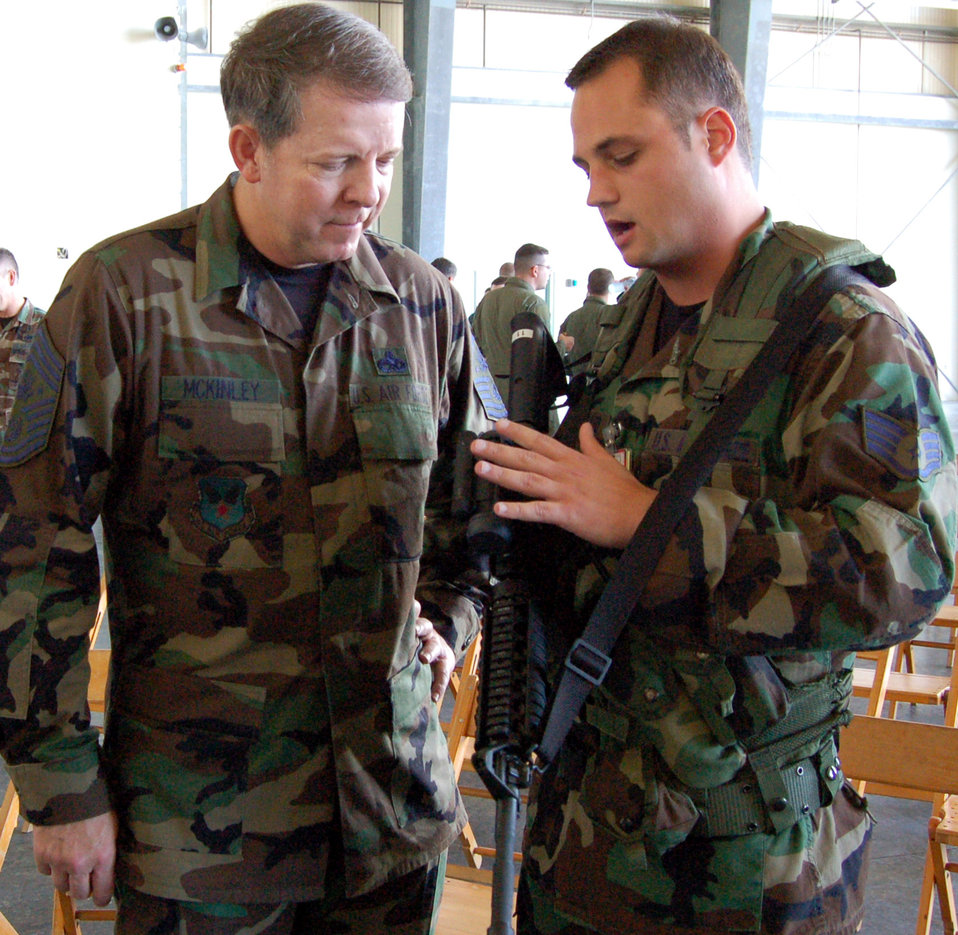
CMSAF visits Southern Command Airmen

Staff Sgt. Jimmy Badolato (right) explains the operation of his automatic rifle to Chief Master Sgt. of the Air Force Rodney J. McKinley Dec. 14 at Forward Operating Location Curacao, Netherlands Antilles. The chief stopped at the base to receive a mission orientation, talk to Airmen about Air Force issues, and spread some holiday cheer. Sergeant Badolato is a security forces Airman deployed to Curacao from the 305th Security Forces Squadron at McGuire Air Force Base, N.J.